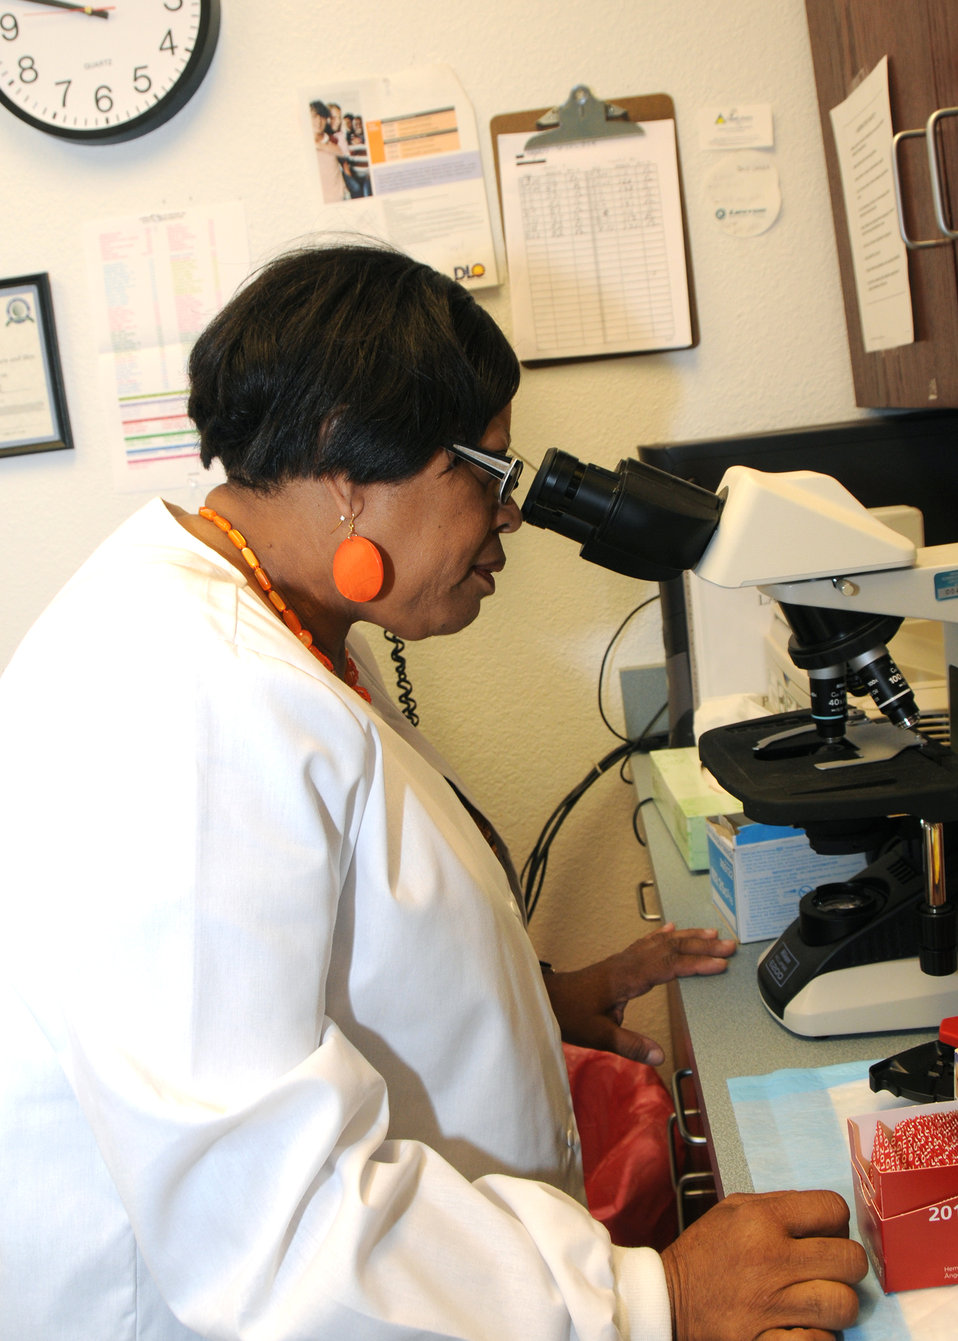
Beverly Hill-Wegley checks blood samples at the Mary Mahoney Health Center in Langston, OK. The clinic received a CF grant of $100,000.00 and a CF l Direct Loan of $563,863.00 from Rural Development from ARRA funding.